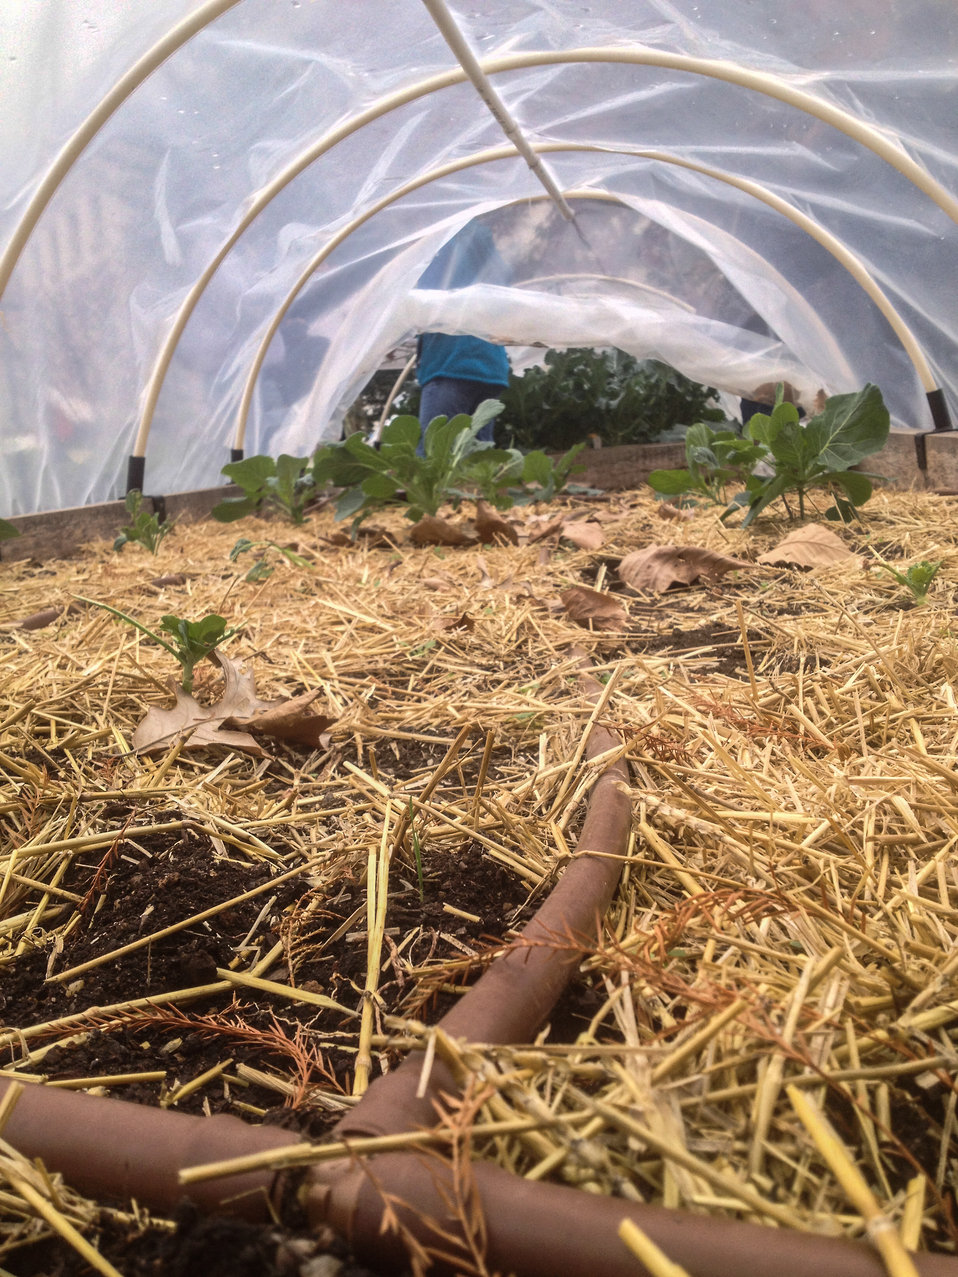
A hoop house made of plastic tube and sheeting covers a raised bed garden, equipped with micro irrigation tubing, straw mulch and seedlings growing at the People's Garden at the USDA Whitten Building east parking lot in Washington, DC, on Friday, November 22, 2013.